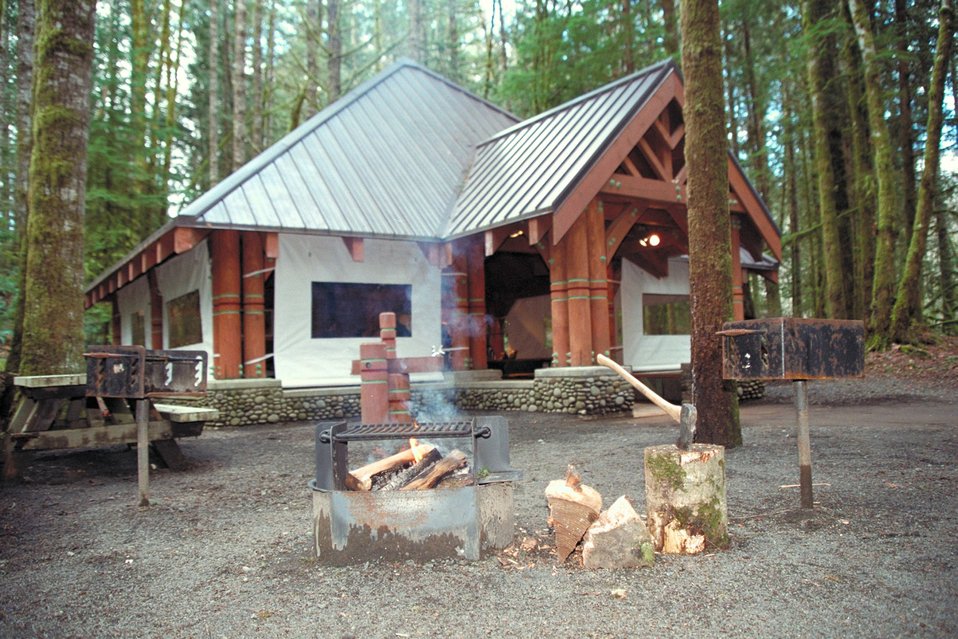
Cascade Stream Watch is an environmental education program conducted at BLM's Wildwood Recreation site.